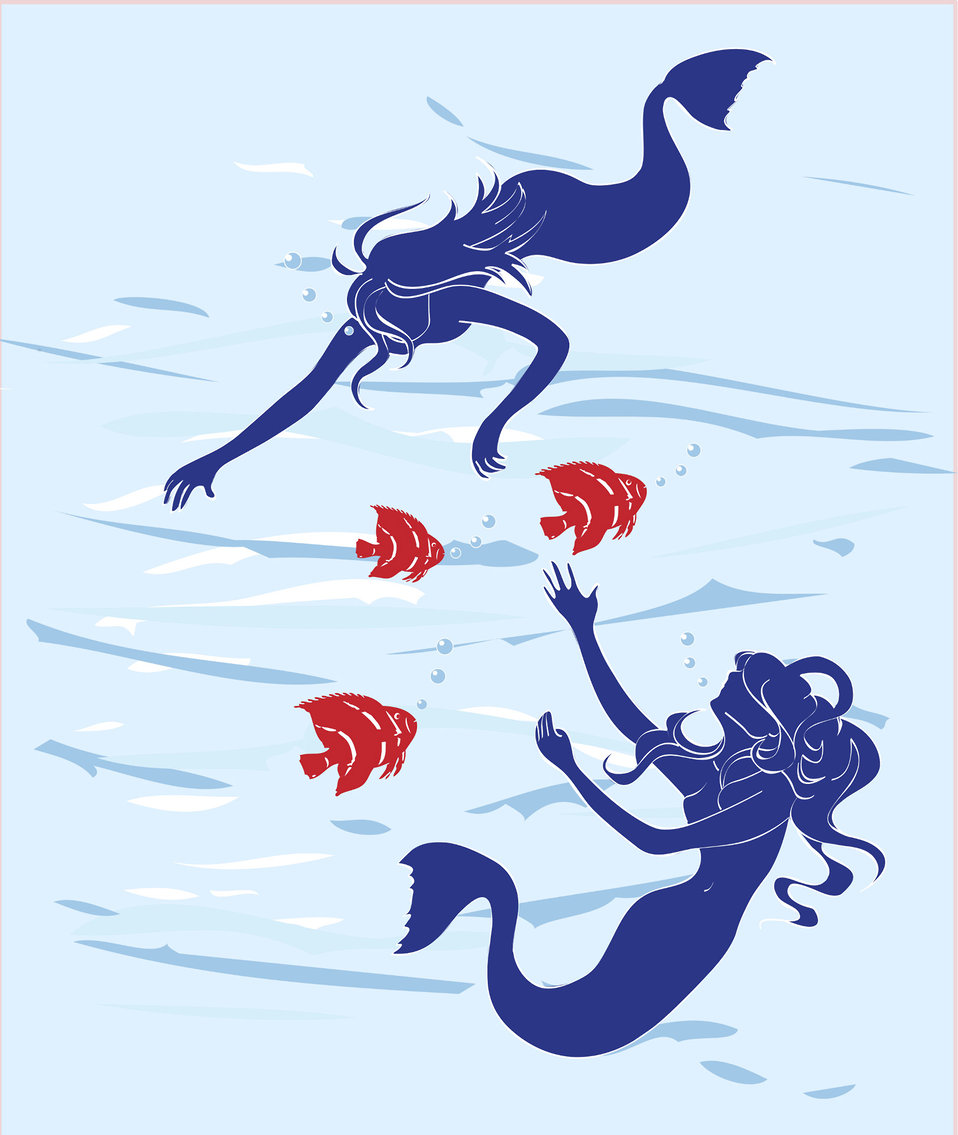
Sirens

Two sirens in the sea with tropical fishes.